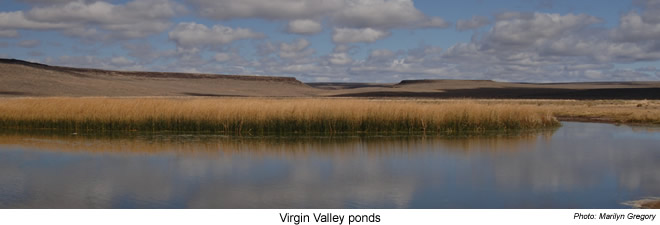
Virgin Valley ponds - Sheldon NWR